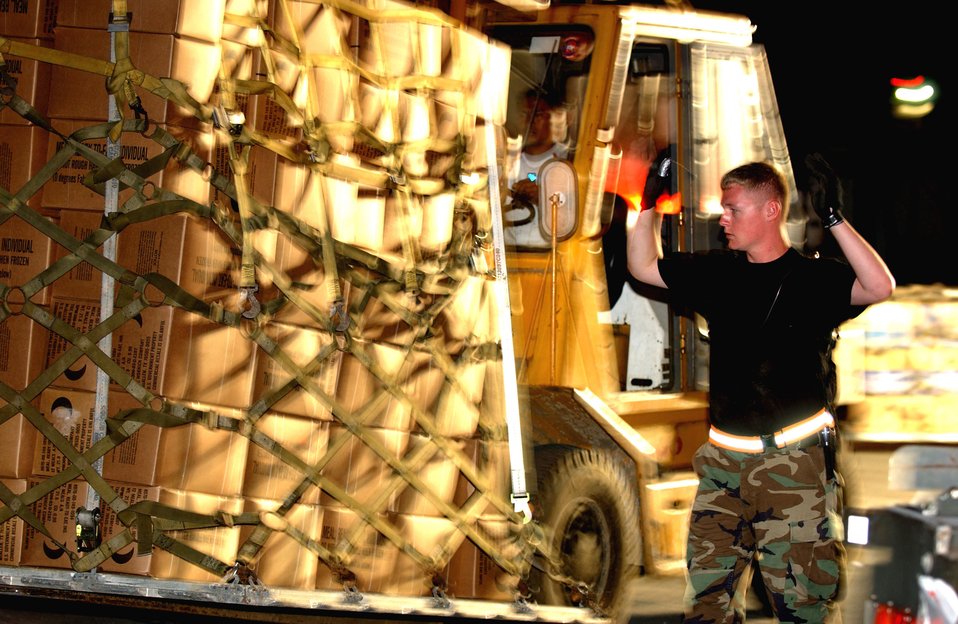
Philippine landslide relief

CLARK AIR BASE, Philippines (AFPN) -- An Airman guides a forklift driver loading a pallet of meals ready to eat at Clark Air Base, Feb. 19. The Airman is among more than 2,000 Philippine and U.S. servicemembers with Joint Task Force Balikatan 2006 working together to assist in the humanitarian relief efforts for victims of the Feb. 17 landslide in the village of Guinsaugon on the island of Leyte, Philippines.